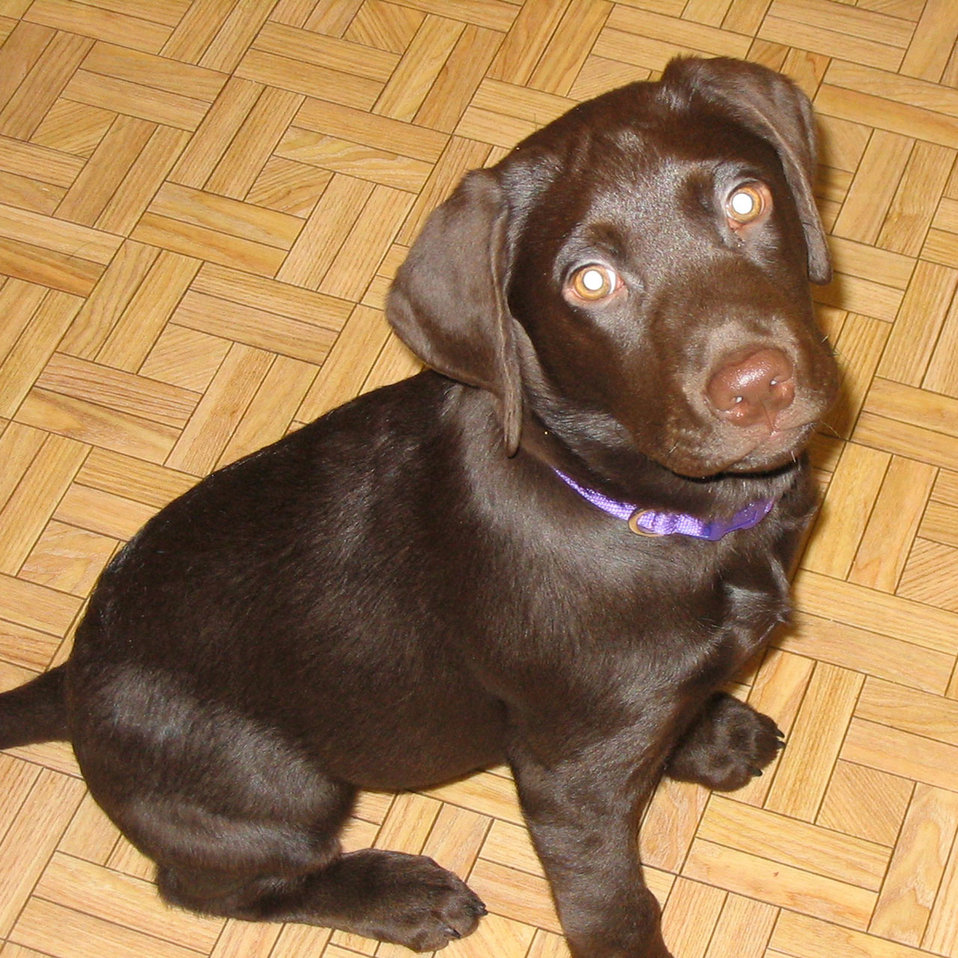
Labrador retriever

A tiny chocolate brown labrador puppy.